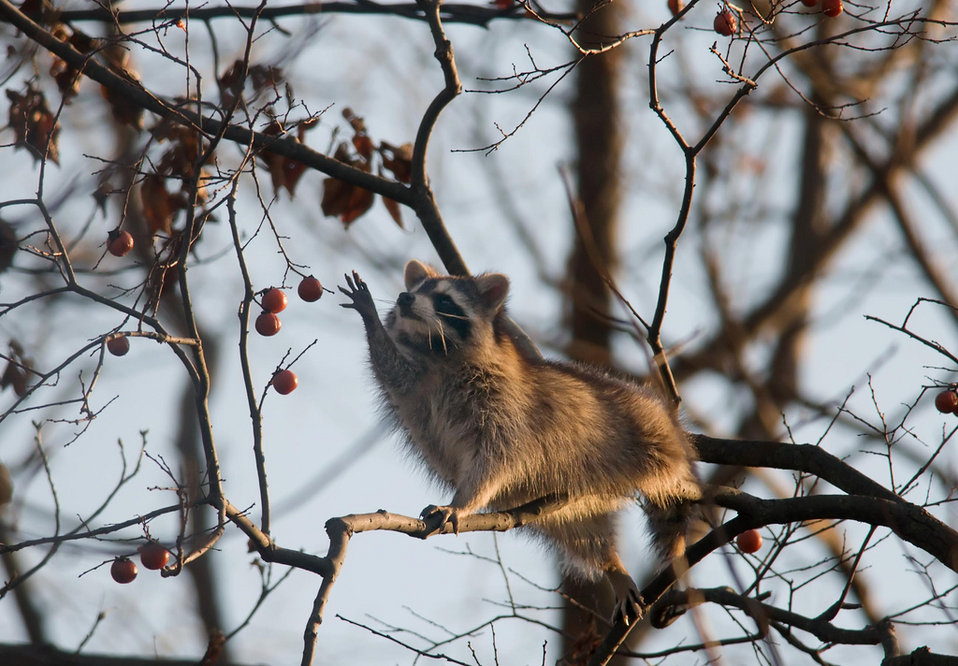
raccoon and persimmons

Bombay Hook National Wildlife Refuge, DE